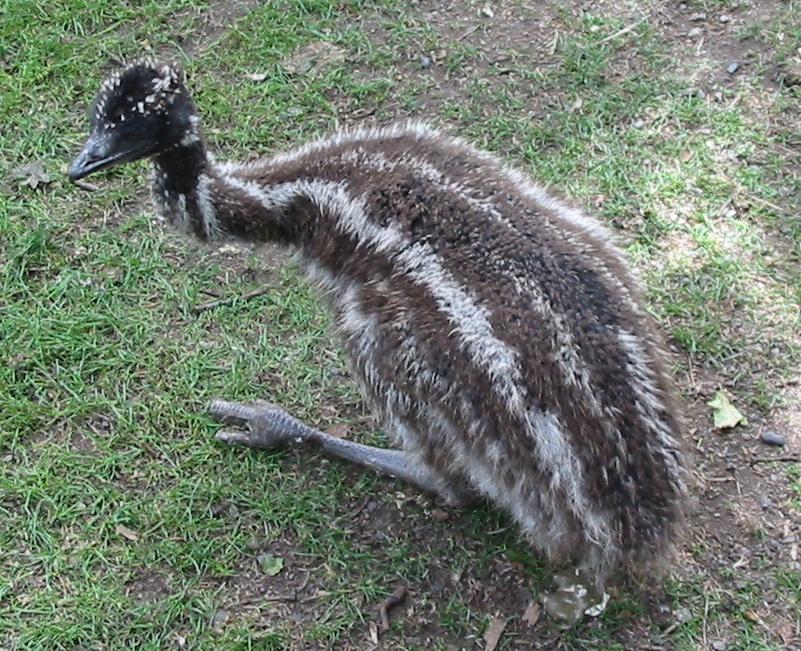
Baby Emu